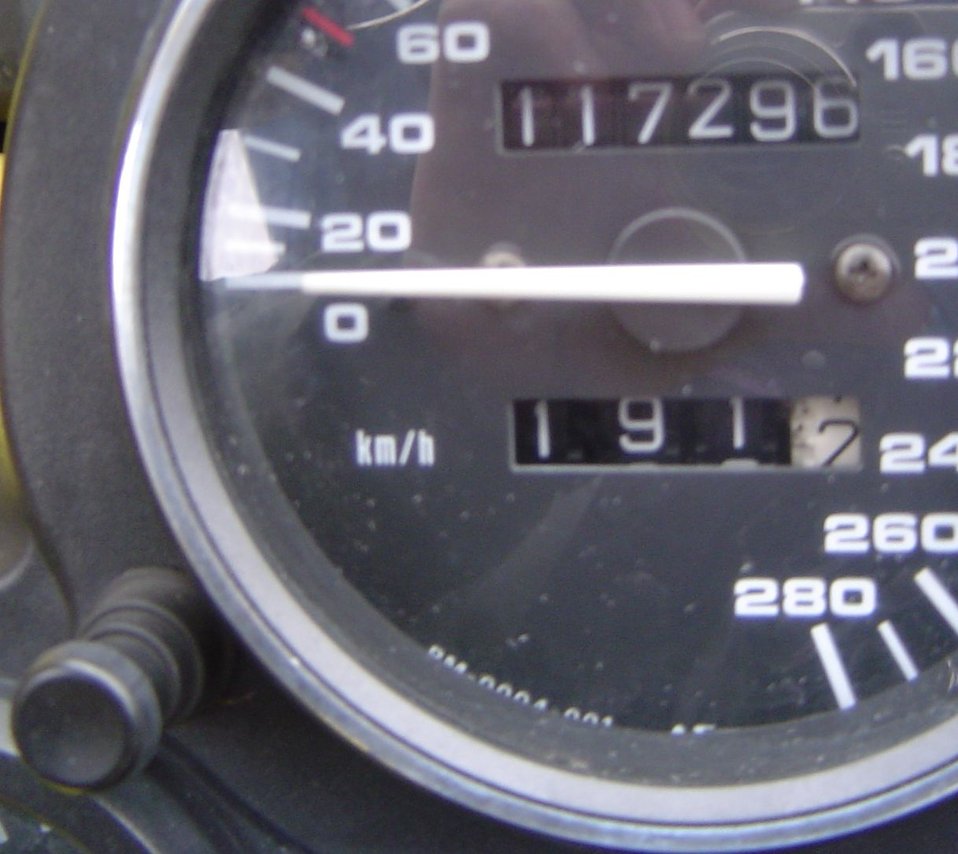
Nederlands: Snelheidsmeter met boven de kilometerteller, onder de dagteller en linksonder de terugstelknop.